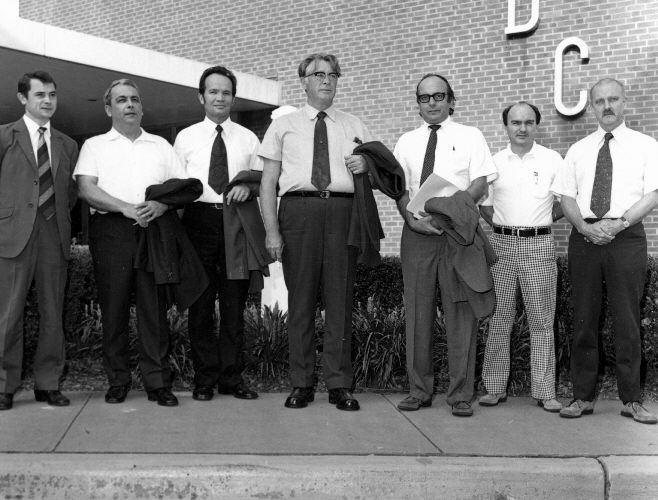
Russian Cooperative Team in Influenza visits CDC.